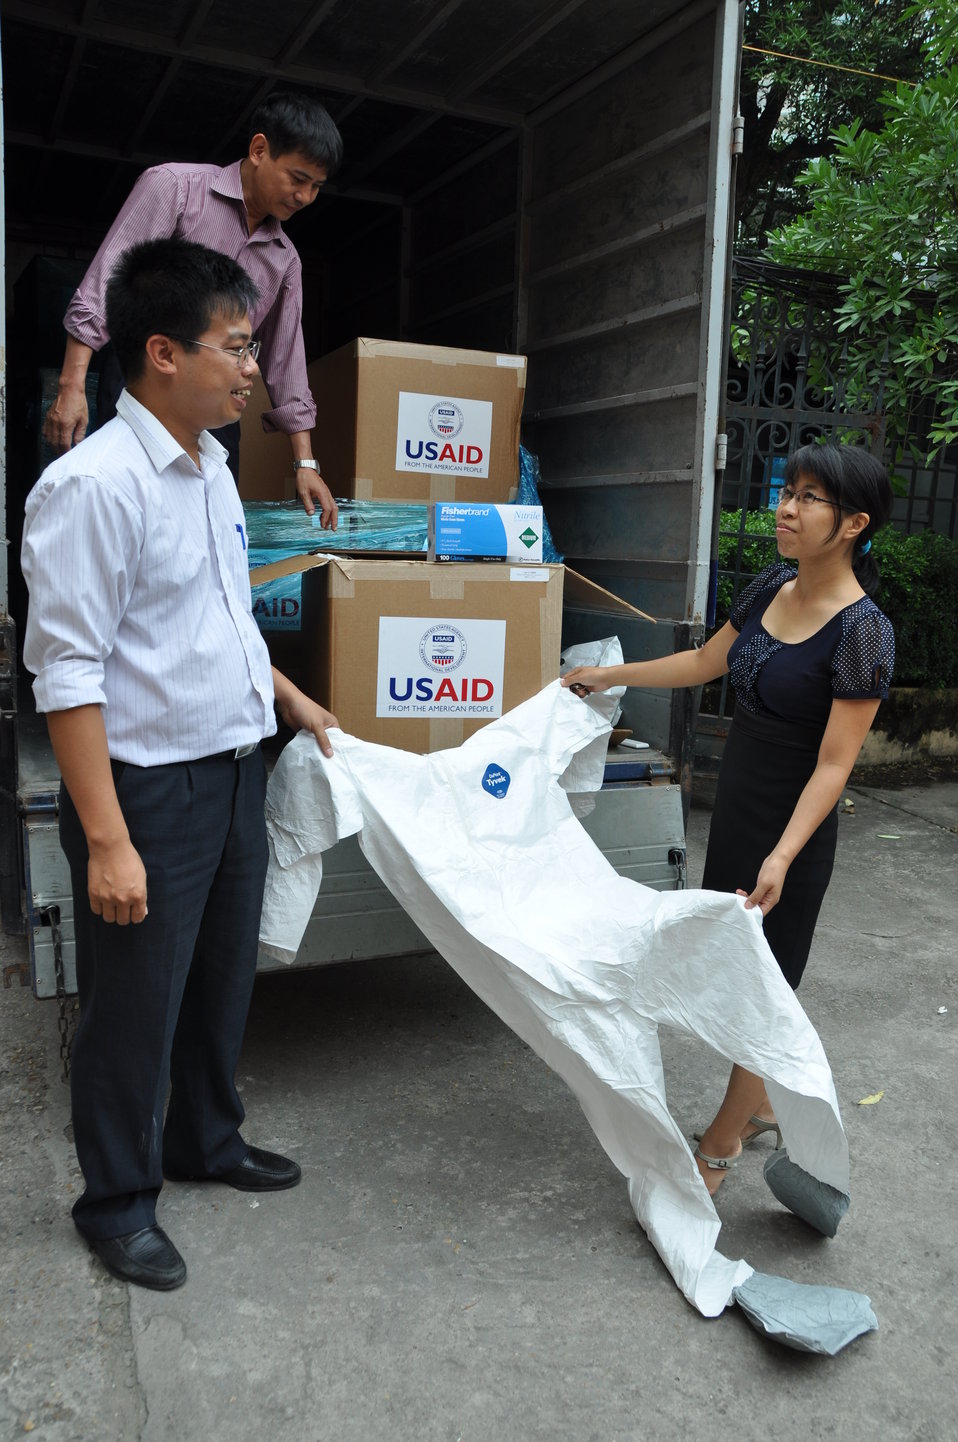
Vietnamese officials inspect new personal protective equipment in Hanoi in September 2011.

Nguyen Dug Hanh of Vietnam's Department of Animal Health (on truck), transport supervisor Doan Phu Huyen (left) and Nguyen Thi Thanh Diep inspect a shipment of 1,700 personal protection kits -- suits, masks, gloves, goggles and related items -- in September 2011 before they are shipped to Can Tho, Ha Nam, Hung Yen, Kieng Giang, and Quang Tri provinces to help veterinary officials and animal health workers battle disease outbreaks in the country. Since 2007, USAID has provided over 15,000 protective equipment kits for animal health workers in Vietnam.